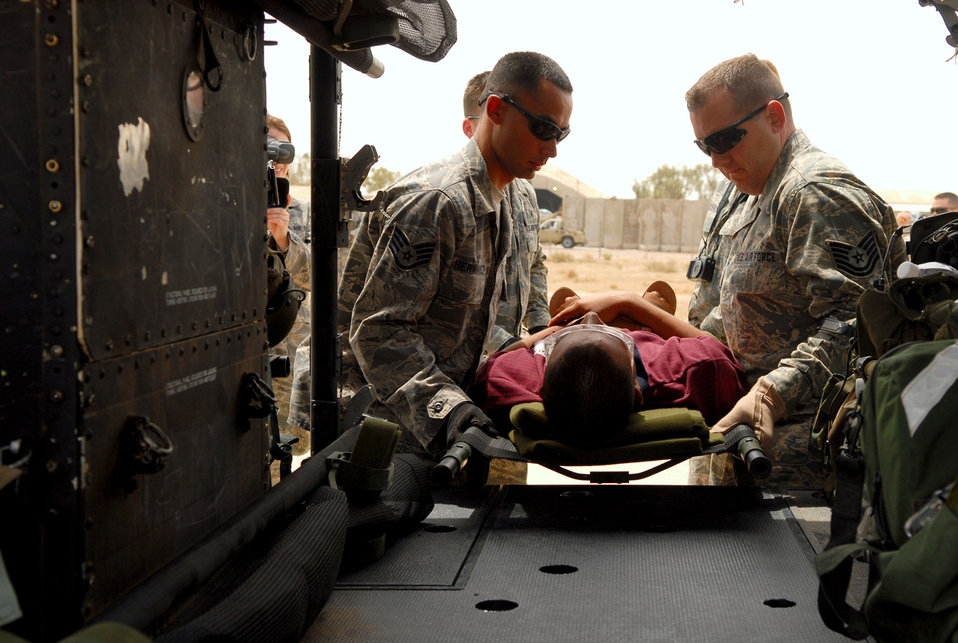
Iraqi air force performs medical evacuation

Staff Sgt. David Hernandez and Tech. Sgt. Joseph Vergona load an Iraqi trauma patient onto an Iraqi air force Huey II May 14 at Balad Air Base, Iraq. The patient was then flown by Iraqi air force members from the Air Force Theater Hospital to U.S. Army's 86th Combat Support Hospital in Baghdad. Sergeant Hernandez is deployed from Westover Air Reserve Base, Mass., and Sergeant Vergona is deployed from the Pittsburg International Airport Air Reserve Station, Penn. They are 332nd Expeditionary Aeromedical Squadron contingency aeromedical staging facility medical technicians.